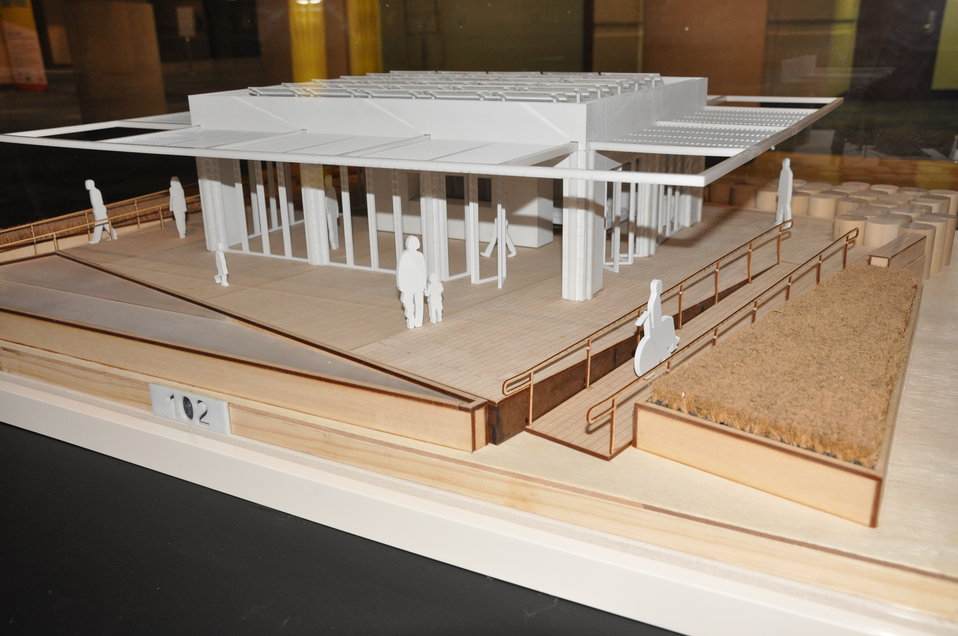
Florida International